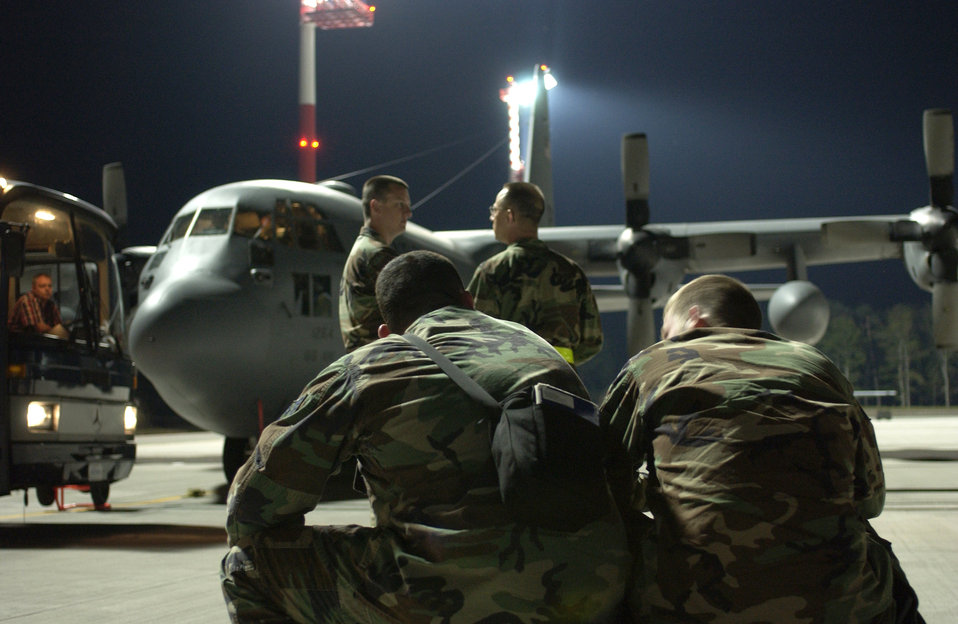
Assisting Americans

Airmen from the 435th Security Forces Squadron wait to leave Ramstein Air Base, Germany, on July 19. The Airmen are assisting humanitarian efforts for Americans who have left Lebanon for Cyprus.